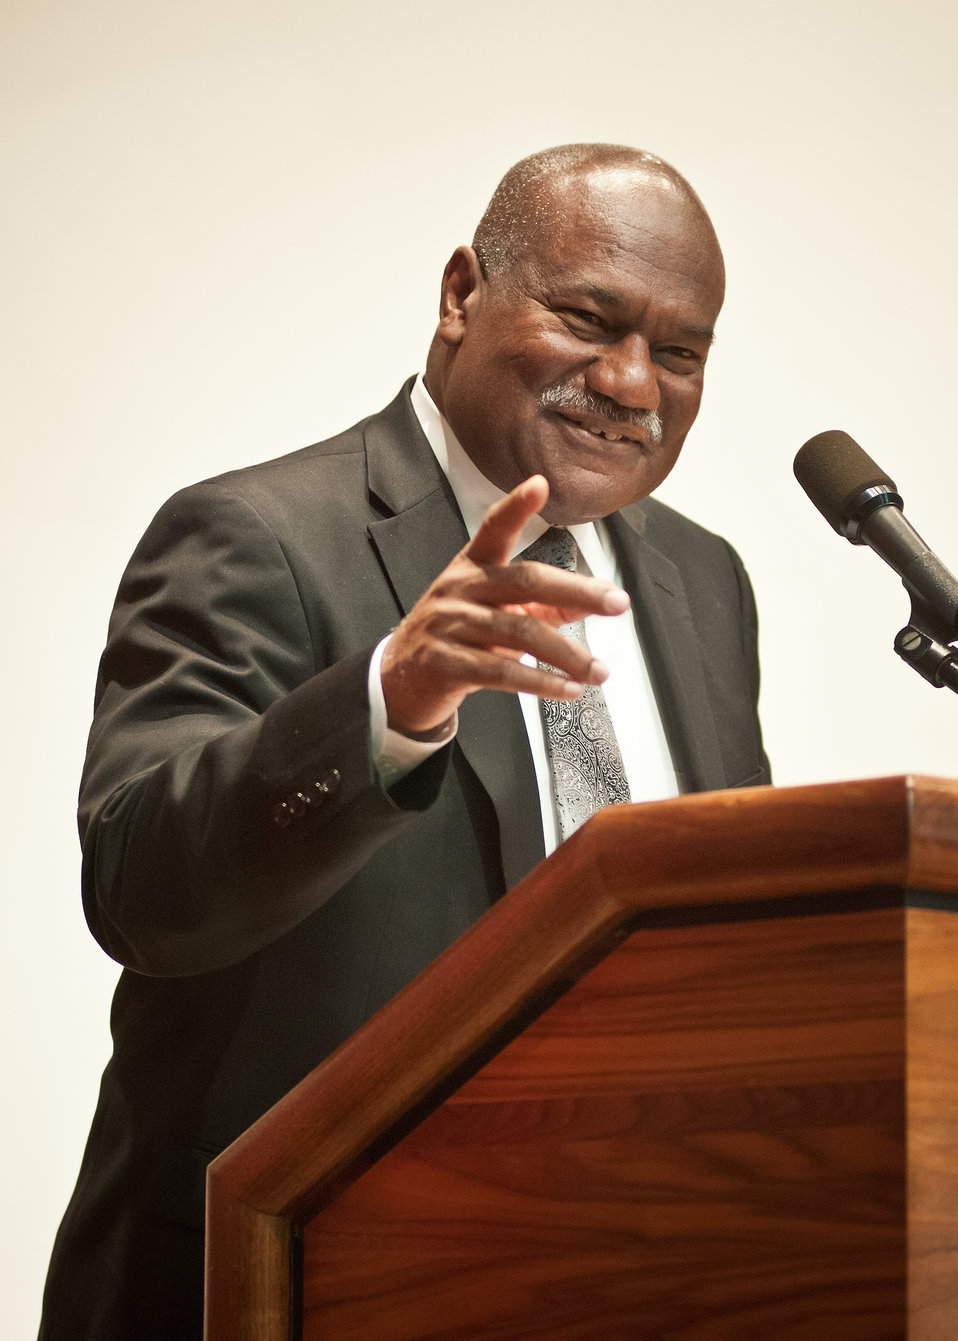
Pearlie Reed, Assistant Secretary for Administration received the 2012 Black History Month Leadership Award at the United States Department of Agriculture Black History Month celebration “Black Women in American Culture and History” at the U.S. Department of Agriculture in Washington, D.C. on Thursday, February 16, 2012.